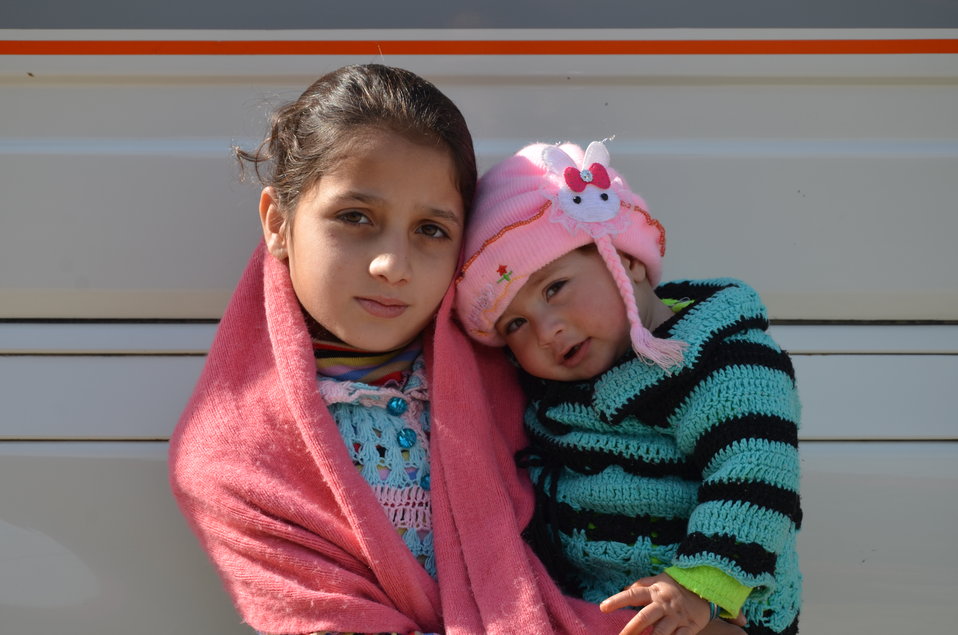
A beneficiary at free medical camp through USAID funded MHU (picture at District Malakand)

Mobile Health Unit (Purchased and fabricated wit financial support from USAID) are providing basic health services in the remote areas